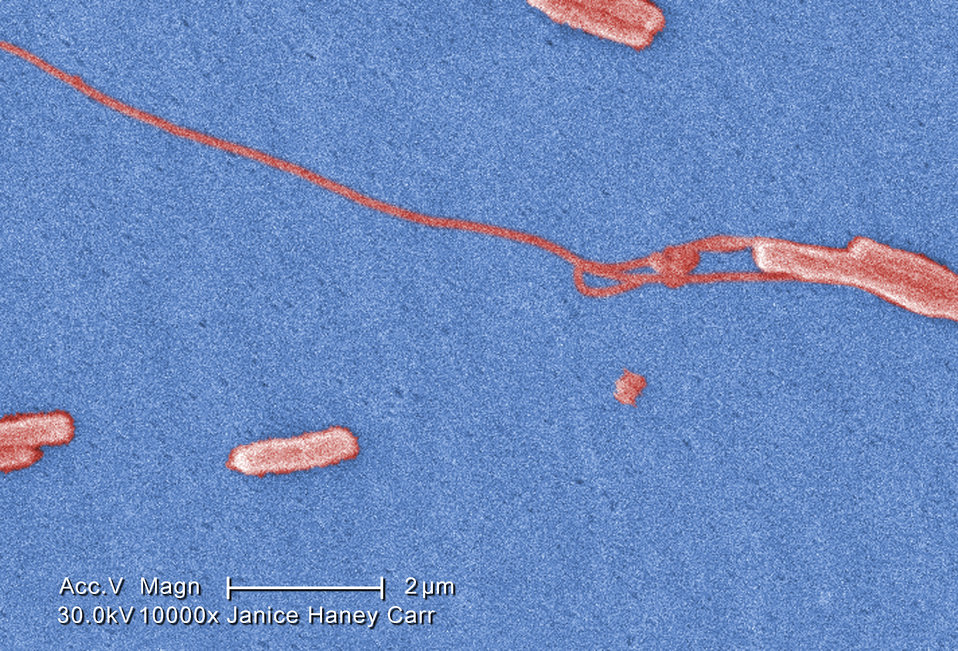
Under a very very high magnification of 10000X, this colorized scanning electron micrograph (SEM) depicted a number of Gram-negative Legionella pneumophila bacteria. Please see PHIL 11092 through 11152 for additional SEMs of these organisms, specifically PHIL 11145 for a black and white version of this image. Of particular importance, is the presence of polar flagella, and pili, or long streamers, which due to their fragile nature, in some of these views seem to be dissociated from any of the bacteria.